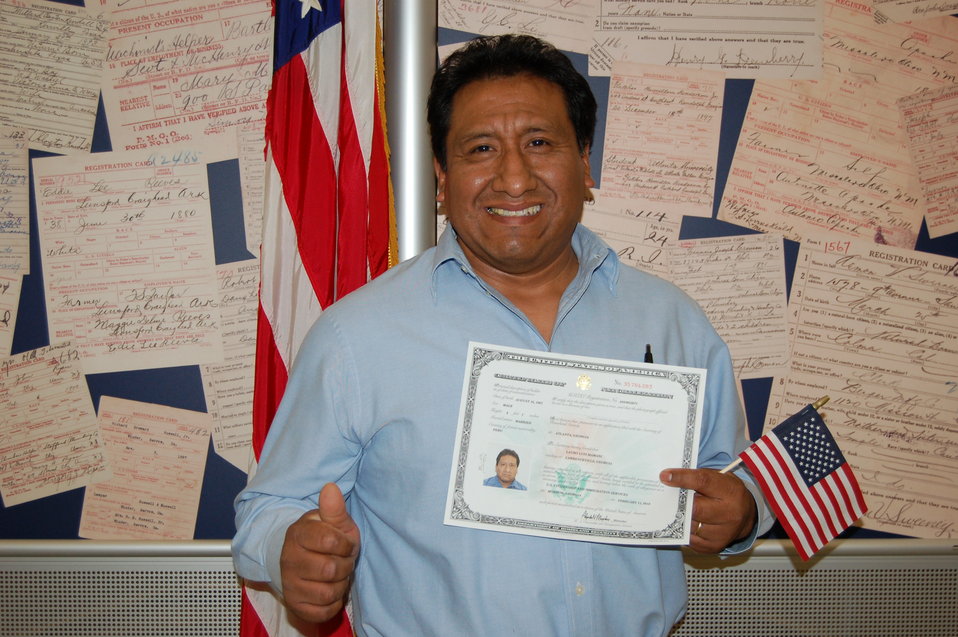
New Citizens